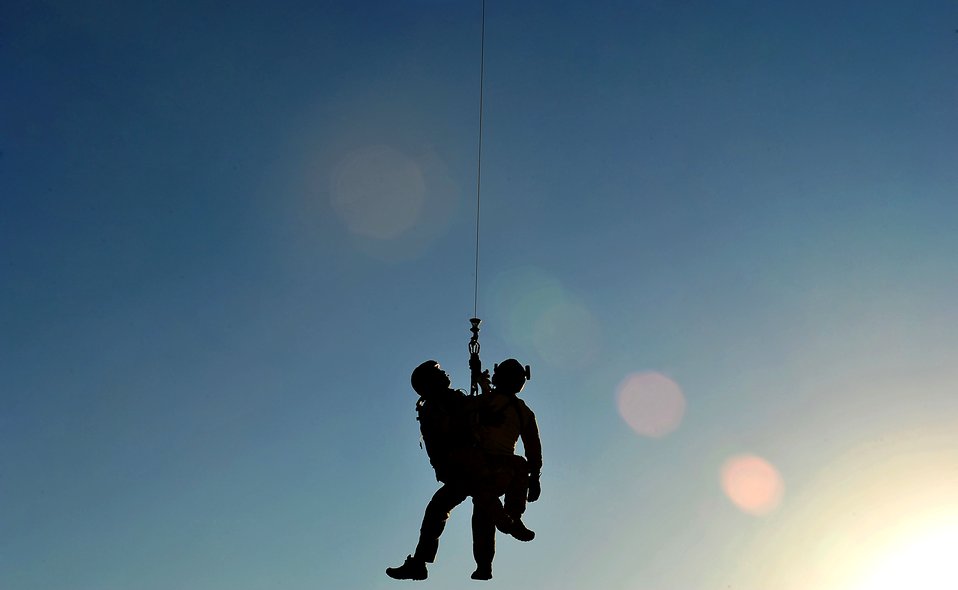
Angel Thunder

Pararescuemen perform a 50-foot hoist extraction from a HH-60 Pave Hawk helicopter Oct. 18, 2011, in Tuscson, Ariz., as part of a search and rescue mission during Angel Thunder 2011. Angel Thunder is an Air Combat Command-sponsored personnel recovery/combat search and rescue exercise with approximately 1,400 participants from U.S. military, federal and state agencies and coalition forces. The Airmen are assigned to the 58th Rescue Squadron, at Nellis Air Force Base, Nev.